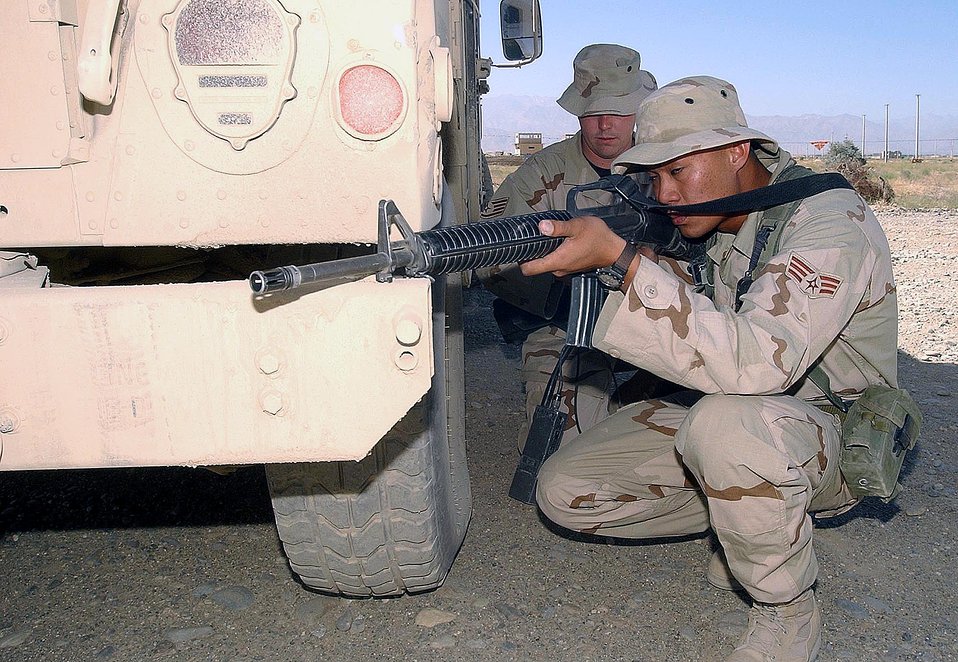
Defensive posture

BAGRAM AIR BASE, Afghanistan -- Senior Airman Zane Aguilar (right) practices a defensive posture behind an armored Humvee as Staff Sgt. Alan Clontz calls in on the radio. The airmen are assigned to the 455th Expeditionary Security Forces Squadron here. Hostile encounters are likely on the perimeter of the base here. Air Force security forces work with the Army to secure the base.